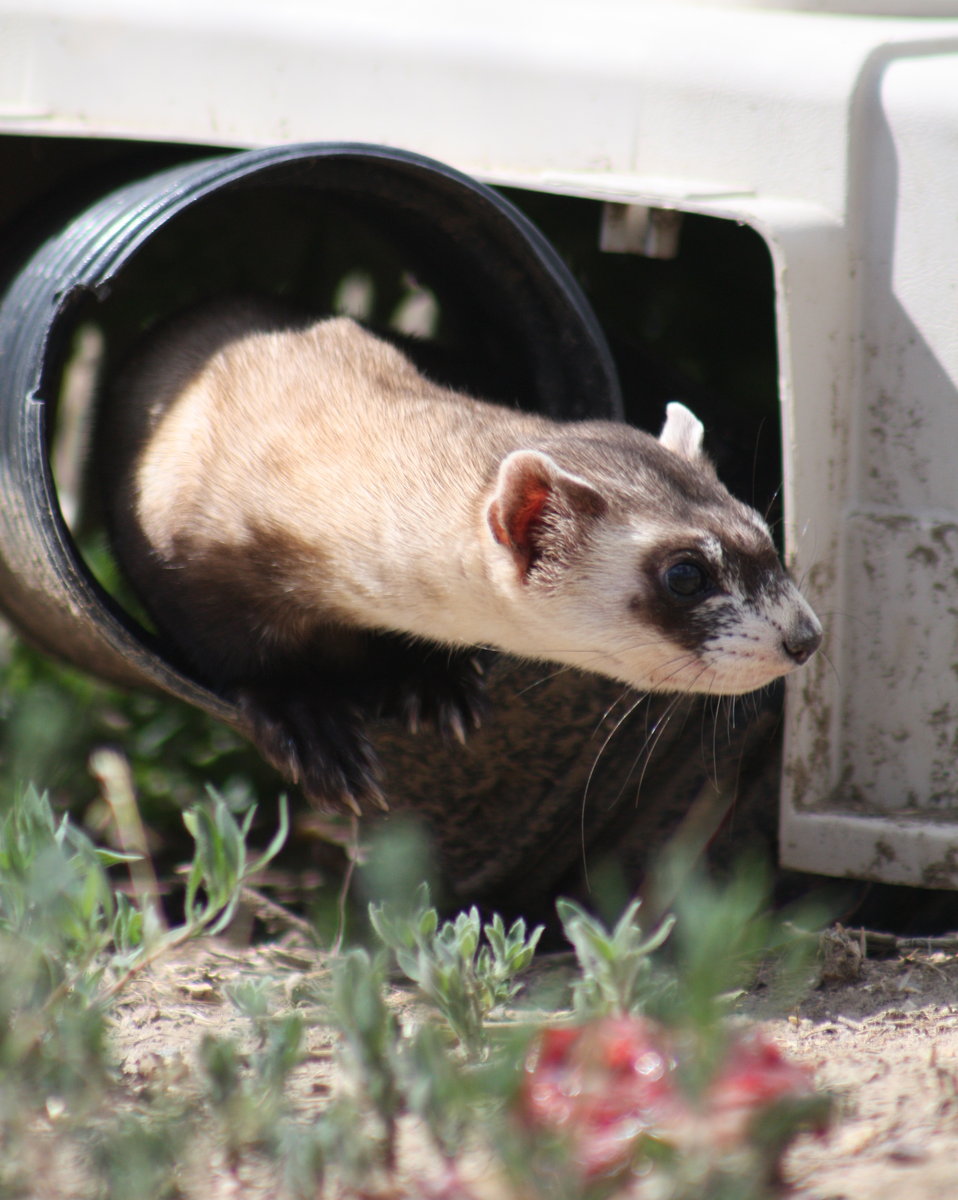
Interns visit the NBFFCC

In the summer of 2012, USFWS Region 6 interns visited the National Black-footed Ferret Conservation Center (NBFFCC) in Colorado to learn how the program reintroduces the endangered Black-footed ferret back into its native habitat.